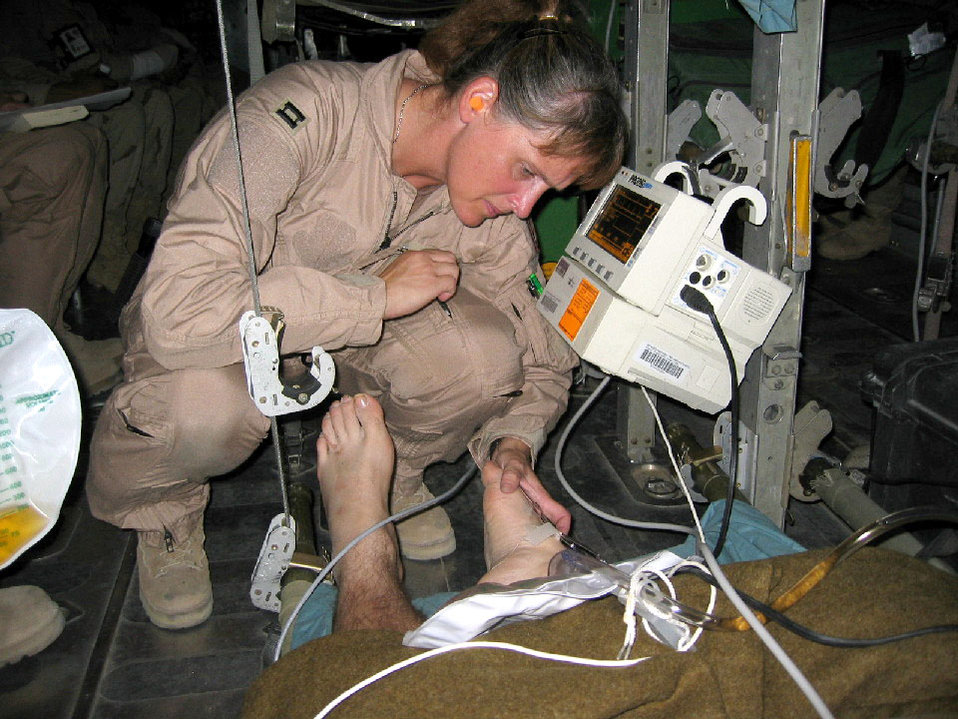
The best care in the air

SOUTHWEST ASIA -- Capt. Cynthia Bond checks in on a patient during a critical-care air-transport team mission. Bond is a team nurse with the 379th Expeditionary Aeromedical Evacuation Squadron and is deployed from Keesler Air Force Base, Miss.